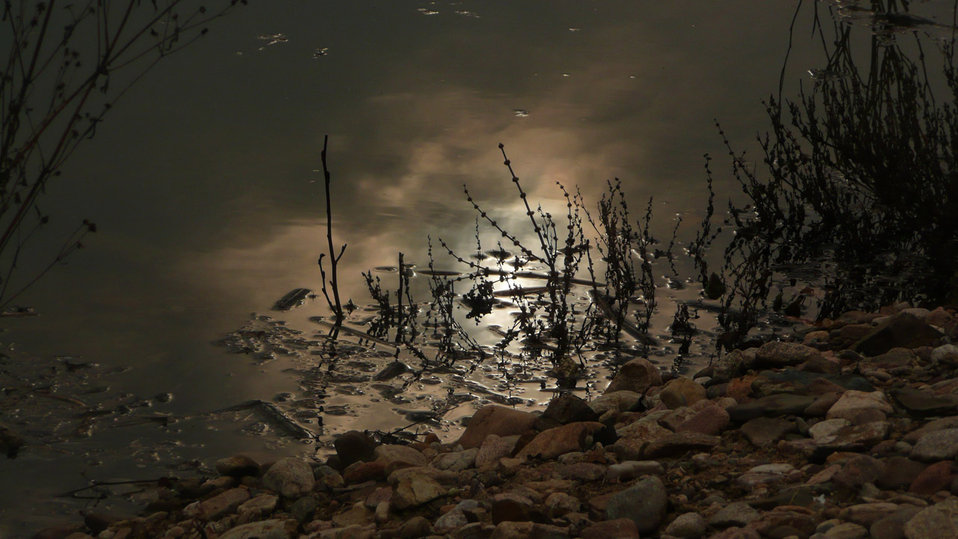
Water

Calm water, water.